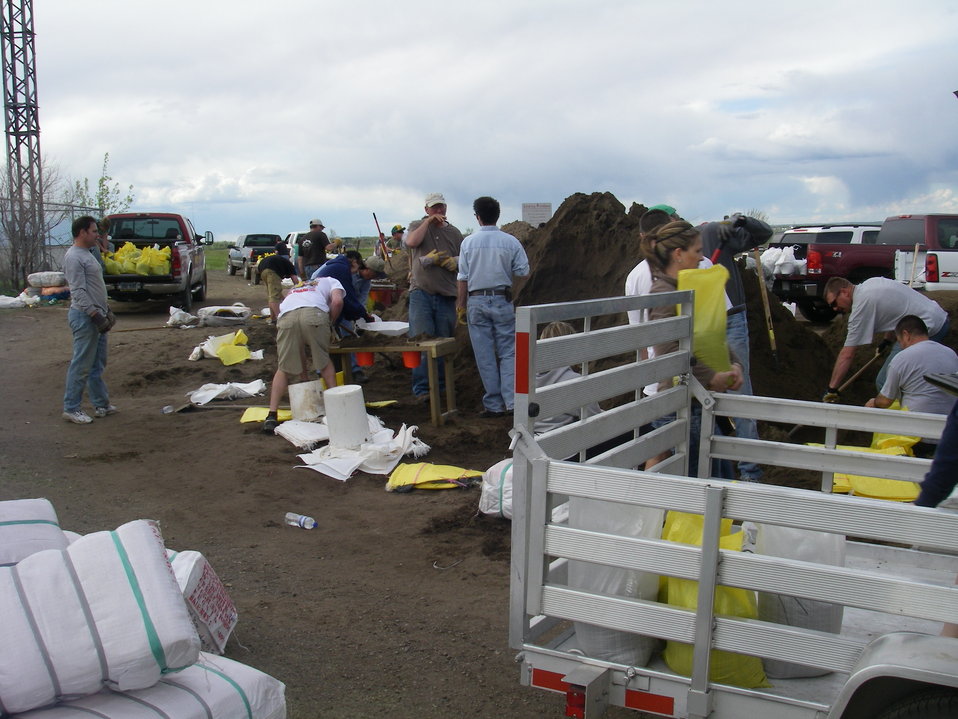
Volunteers Fill Sand Bags

As the Missouri river continues to rise, the U.S. Fish and Wildlife Service and other partners volunteer to fill sand bags and take other preemptive measures to protect lives and property below Garrison Dam in the Bismarck/Mandan area in North Dakota. With planned releases from the dam expected to nearly double the river’s flow in the next two weeks, more flooding is expected.